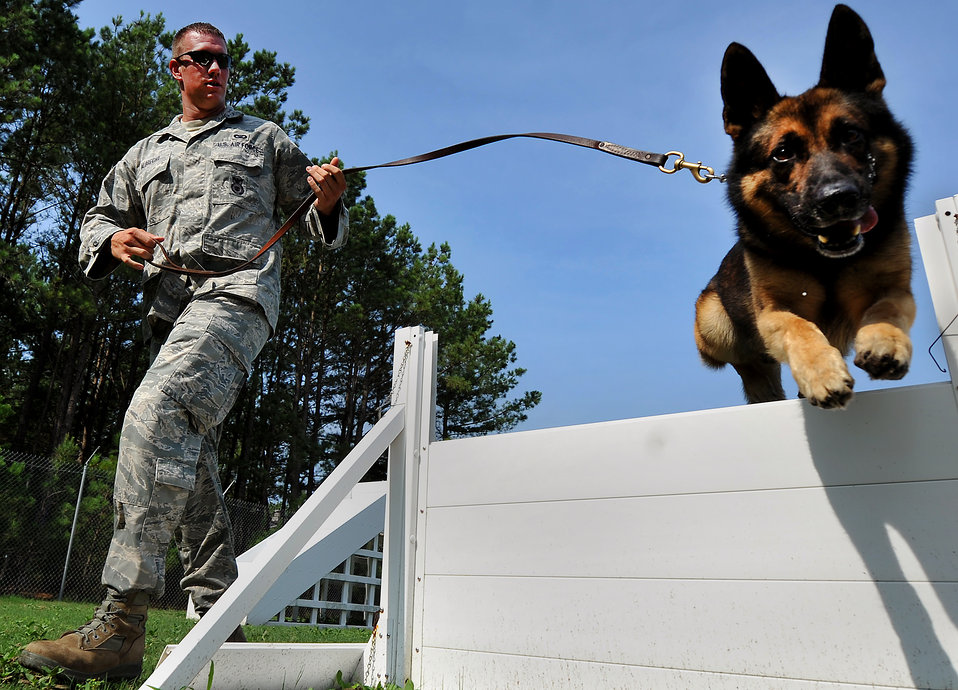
20th Security Forces Squadron Military Working Dog

Staff Sgt. Jason Albrecht, a 20th Security Forces Squadron senior military working dog handler, runs Markey through an obstacle course during an obedience training session July 13, 2011, at Shaw Air Force Base, S.C. The 20th SFS MWD trainers work hard to train and prepare dogs, like Markey, for real world situations, such as drug raids, patrols, and other specialized mission functions for the Department of Defense and government agencies.